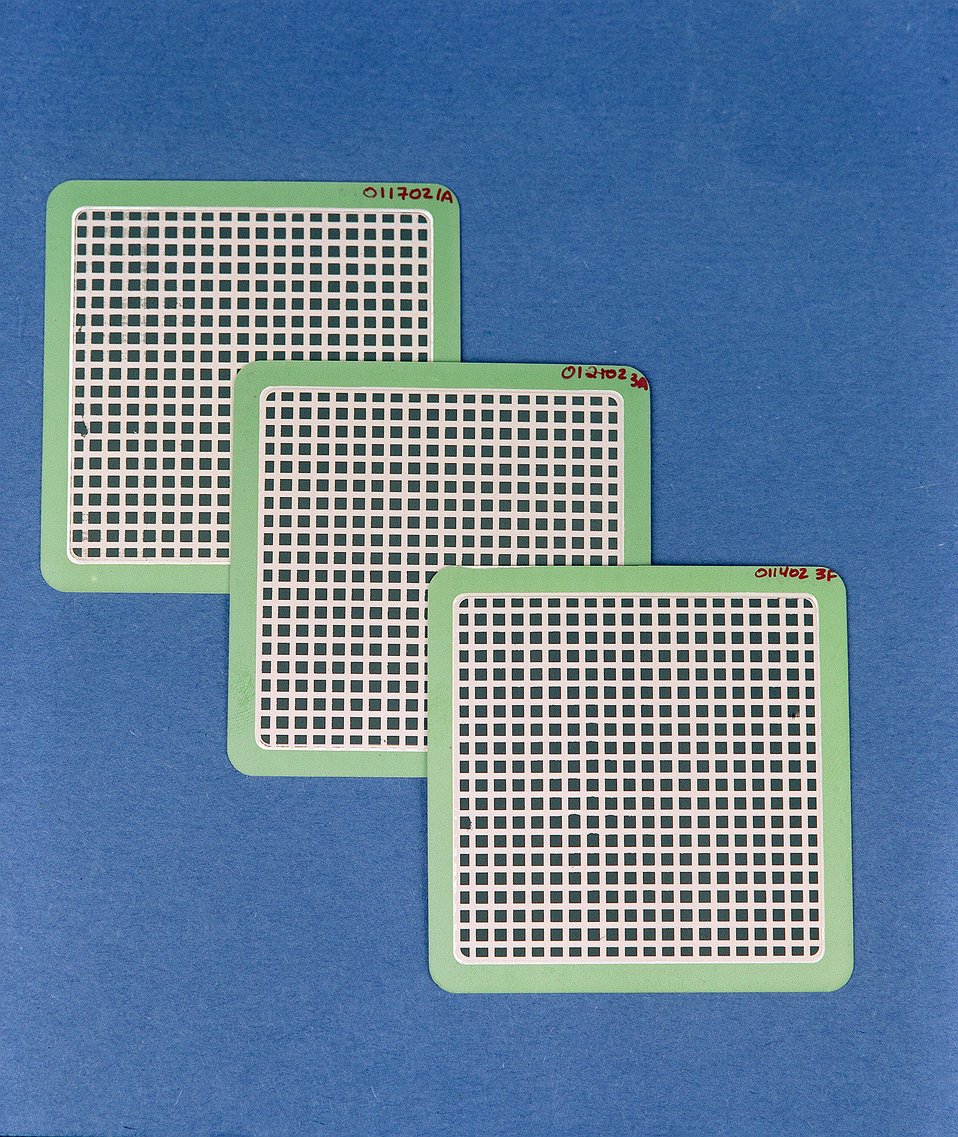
FUEL CELLS THAT ARE BEING DEVELOPED AT THE PACIFIC NORTHWEST NATIONAL LABORATORY.

PNNL IS DEVELOPING THE MATERIAL FOR THE DOE'S SOLID STATE ENERGY CONVERSION ALLIANCE (SECA) CORE TECHNOLOGY PROGRAM. SECA IS AN ALLIANCE OF U.S. INDUSTRY, UNIVERSITIES, AND OTHER RESEARCH ORGANIZATIONS CREATED TO ACCELERATE THE DEVELOPMENT AND COMMERCIALIZATION OF LOW-COST SOLID OXIDE FUEL CELLS FOR STATIONARY, TRANSPORTATION AND MILITARY APPLICATIONS.